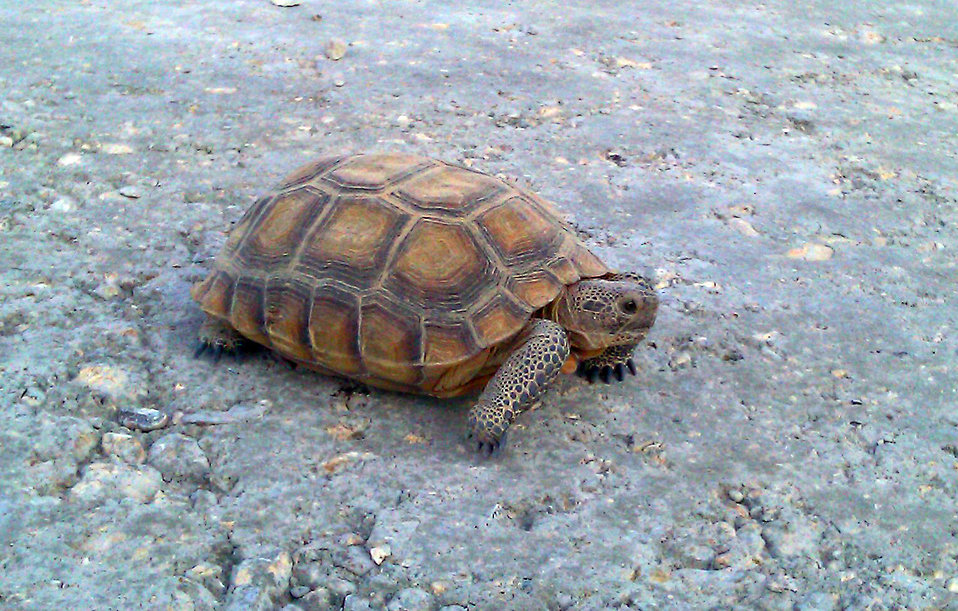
Desert Tortoise2

Desert tortoise near Las Vegas.